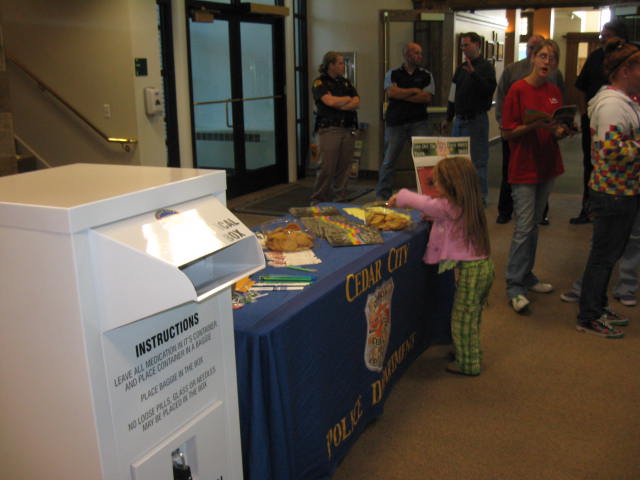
NDFW Assembly in Cedar City, UT

The students signed a pledge to be drug and alcohol free.